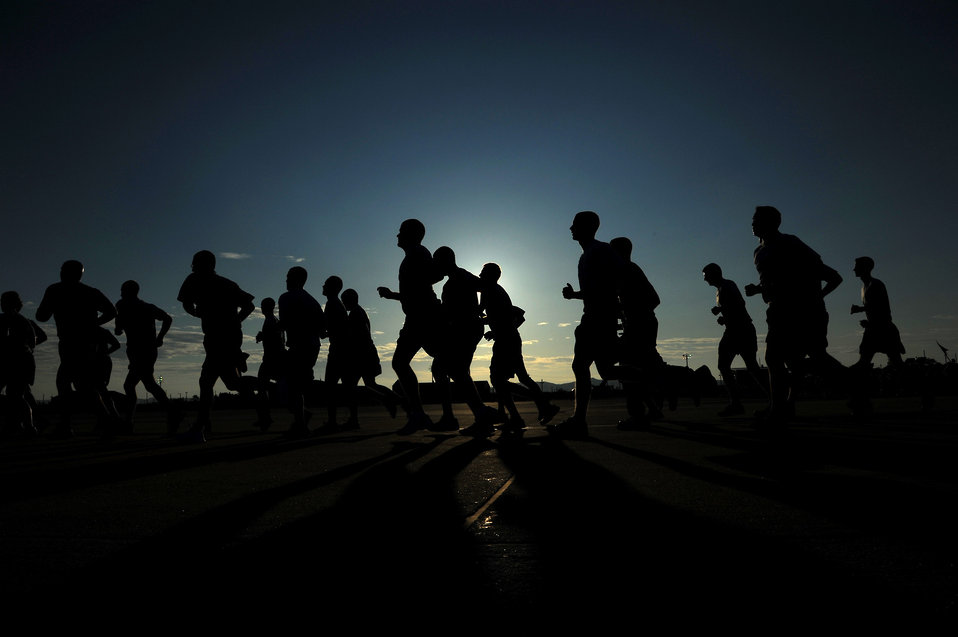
Warrior?s run

Members of the 8th Fighter Wing participate in the Warrior Run July 19, 2011, at Kunsan Air Base, South Korea.